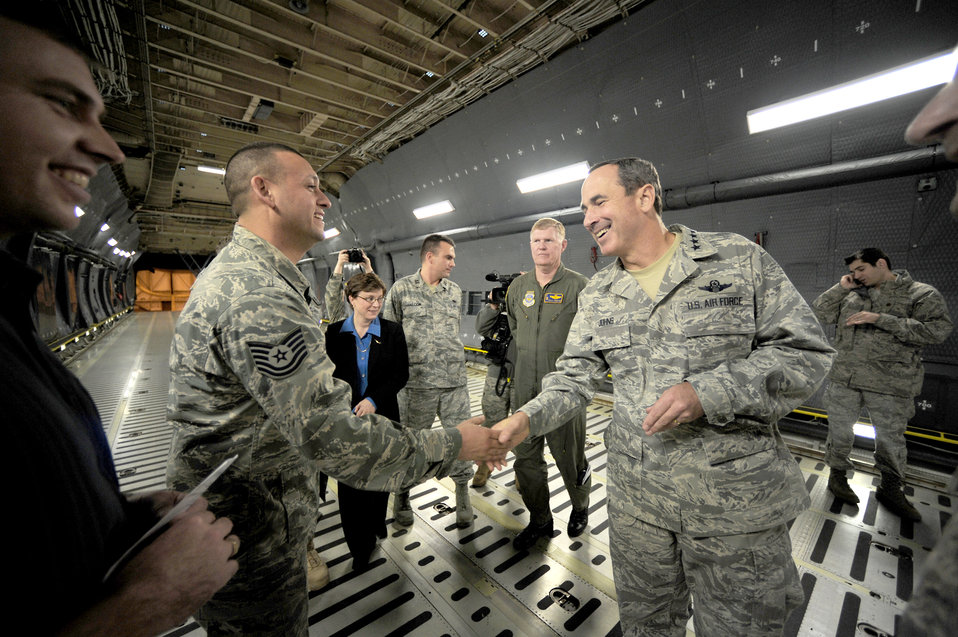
C-5M arrives at Dover

Gen. Raymond E. Johns Jr., commander of Air Mobility Command, greets members of the 105th Maintenance Squadron at Stewart Air National Guard Base, N.Y., Nov. 5, 2010, during a ceremony there to mark the completion of reconditioning of a C-5M Super Galaxy. Later, General Johns flew the C-5M to its new home at Dover Air Force Base, Del.